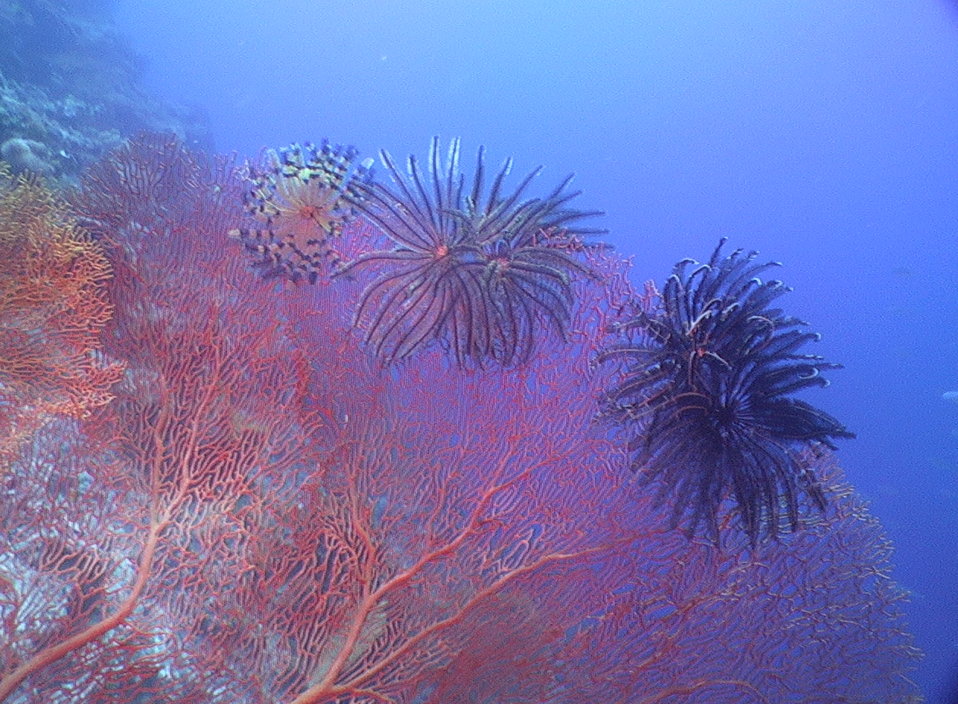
Crinoidea, ook wel bekend als zeelelies en haarsterren, een klasse van stekelhuidigen uit de stam van Enichodermata.